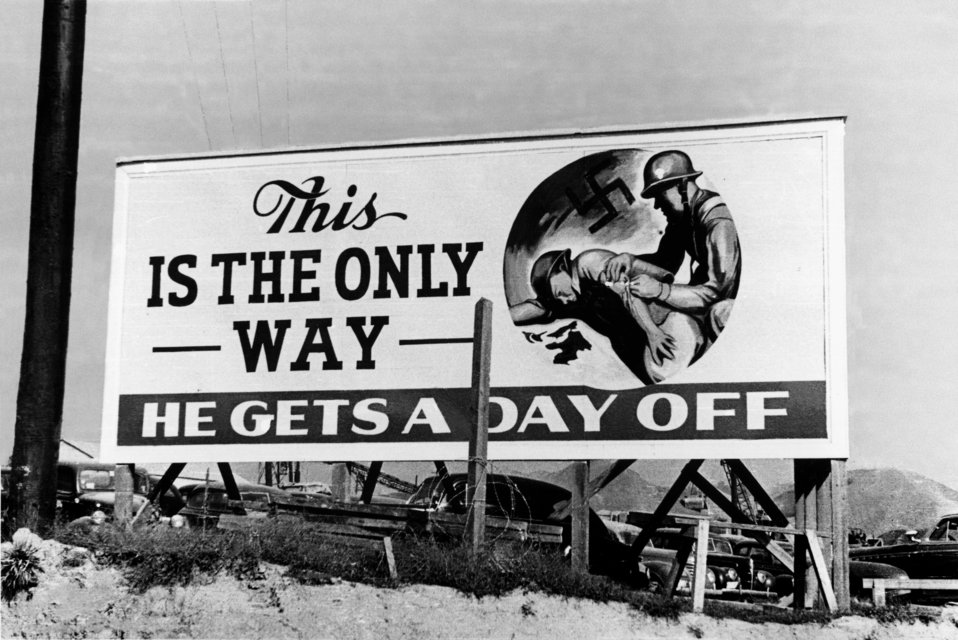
Billboard Oak Ridge During World War II

ROLL97-22 DOE photo Ed Westcott

Billboard Oak Ridge Tennessee 10/12/43